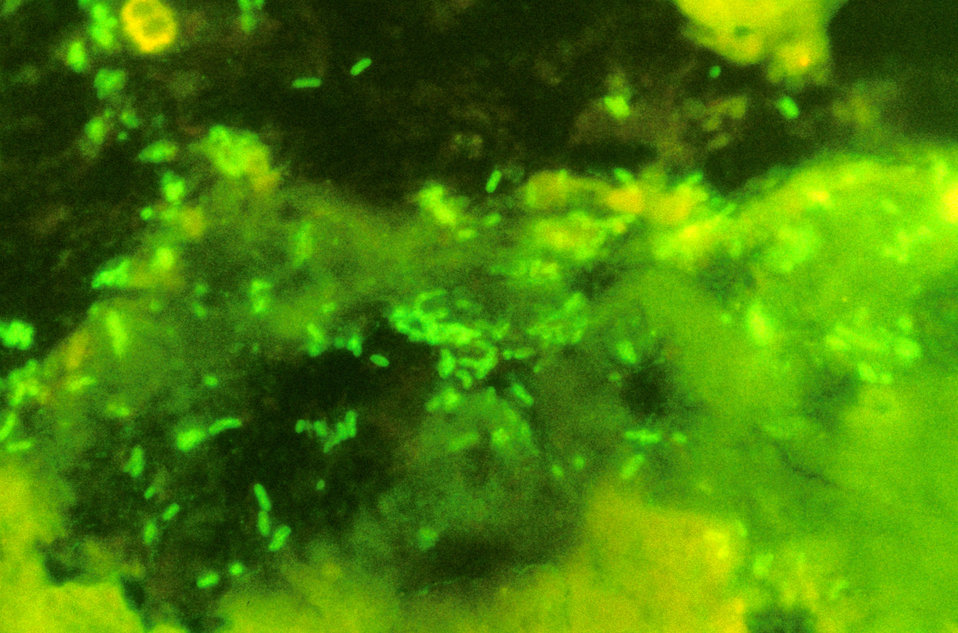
Escherichia coli in FA stained section of intestine from an 8-month old child suffering from chronic diarrhea.